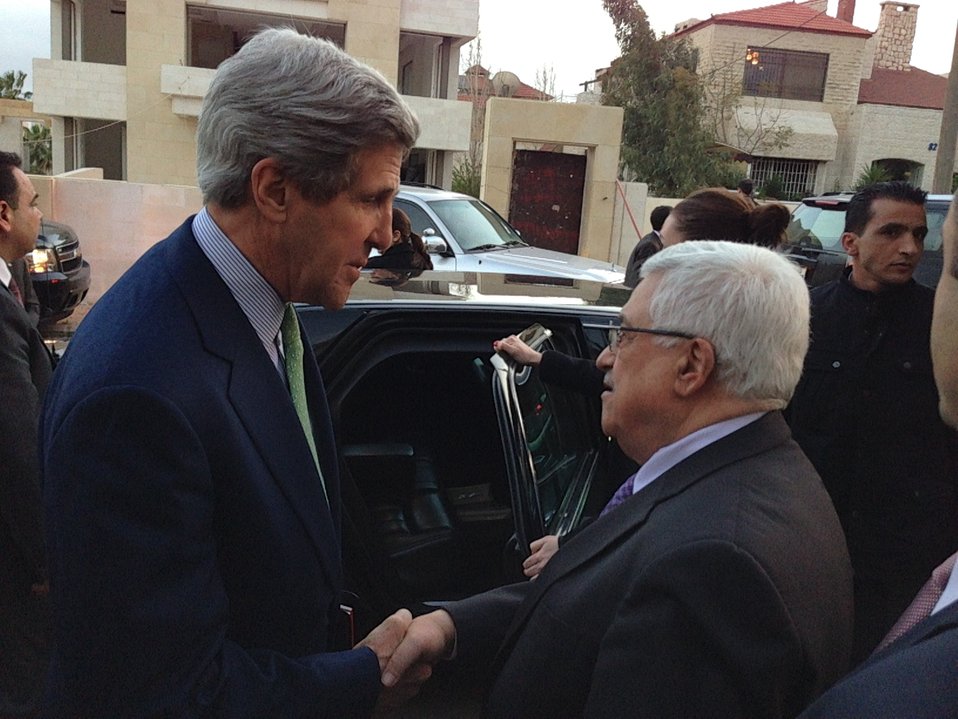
Secretary Kerry Bids Farewell to Palestinian President Abbas in Amman

U.S. Secretary of State John Kerry and Palestinian President Mahmoud Abbas bid farewell following their meeting in Amman, Jordan on March 23, 2013.